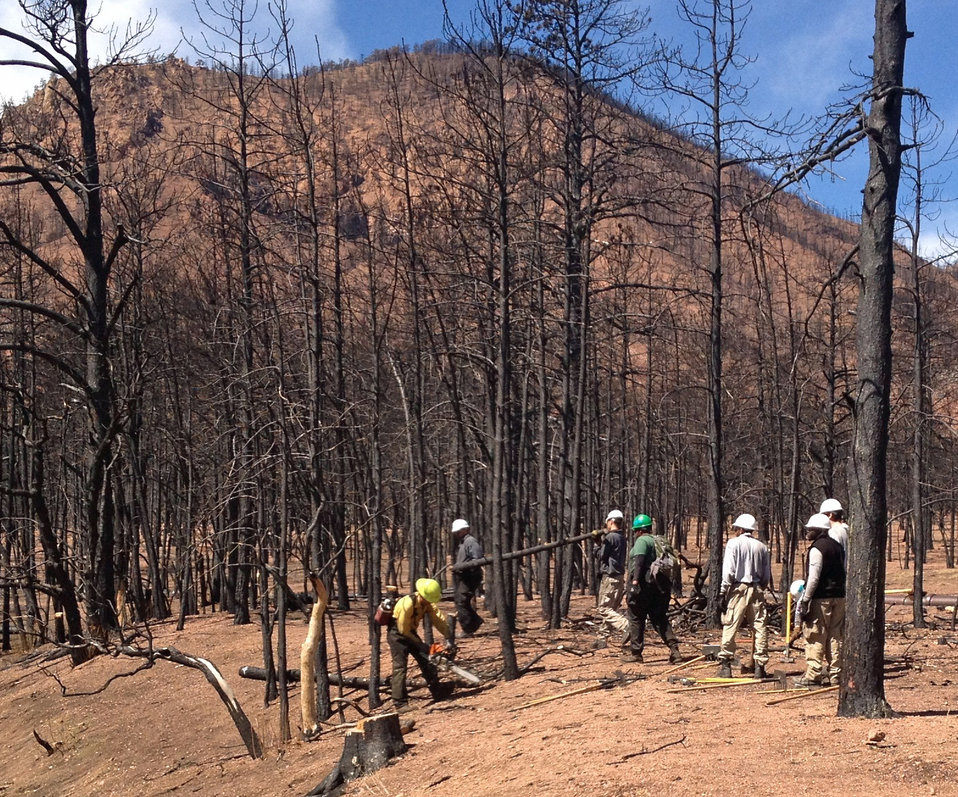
Waldo Canyon Partnership-a

An AmeriCorps crew performs bank stabilization work at the site of the 2012 Waldo Canyon Fire in Colorado Springs, Colo. Projects like this will be enhanced with the 5-year partnership between the U.S. Forest Service and Colorado Springs Utilities, which will contribute $6 million over the next five to 10 years.